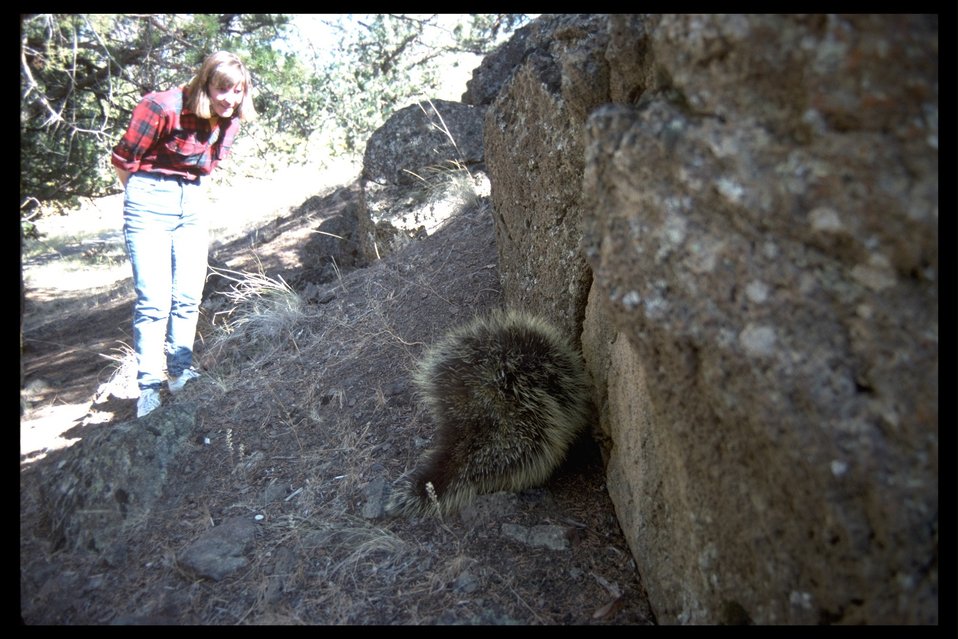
Jill Bowling of government staff looks at Porcupine in the Blitzen River WSA.